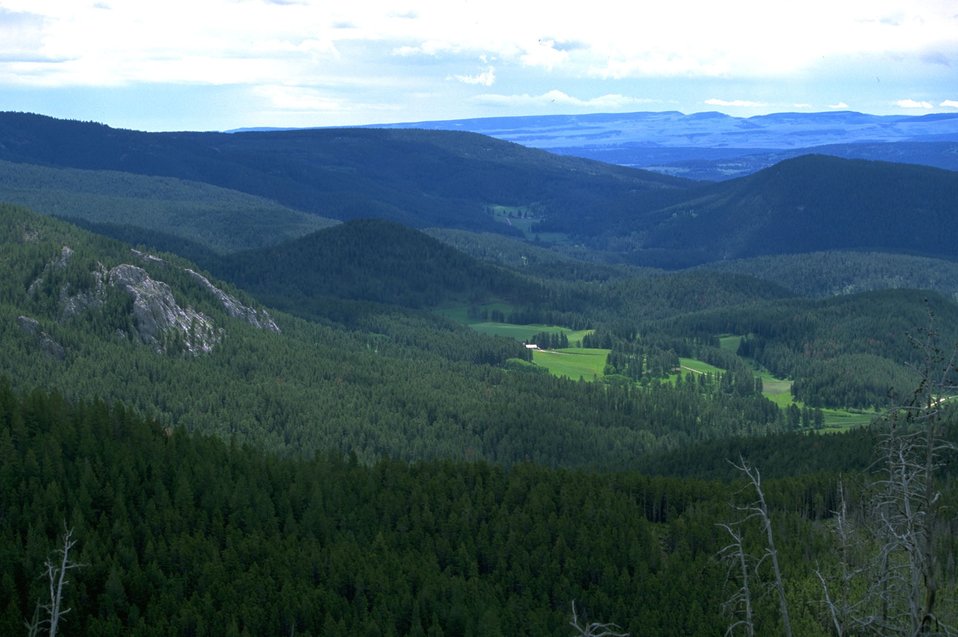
Scenic view of the mountains and a valley in the Judith Mountains